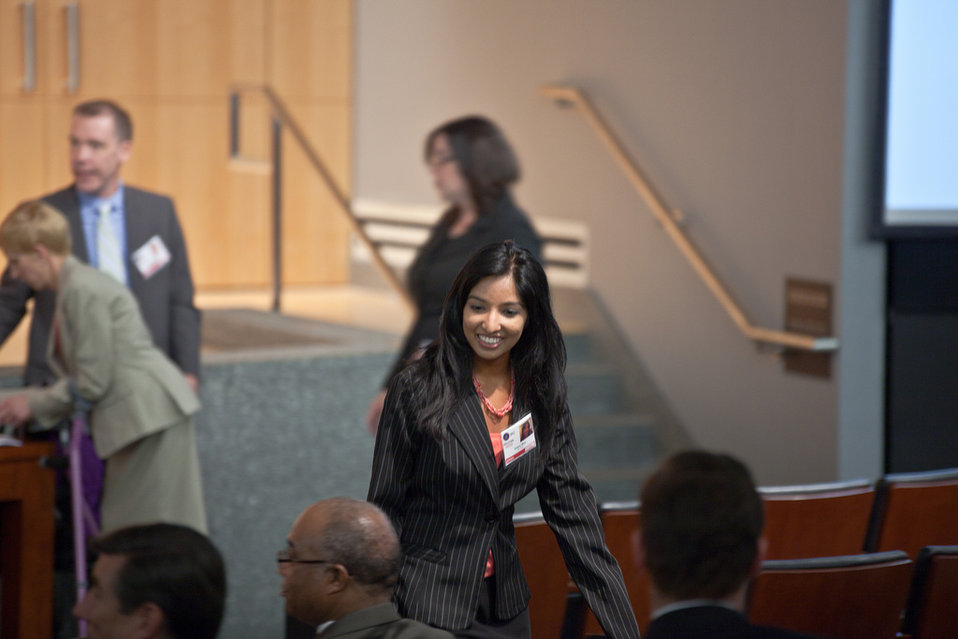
Student employee sets standard in workforce recruiting program

Veena Meer, a student employee with the Air Force Equal Opportunity Office, received a Defense Department award in a ceremony at the Securities and Exchange Commission in Washington, D.C., July 26, 2012. Meer was awarded for her work in promoting the employment of disabled people. She and four others were chosen from a field of 400 students supporting the workforce recruitment program. Her accomplishments include helping to place the highest amount of workforce recruitment program students in Air Force history, increasing the efficiency of screening program candidates, eliminating discrepancies to ensure 100-percent accuracy in the program database and creating exit surveys to gather feedback from those students who declined positions with the program.